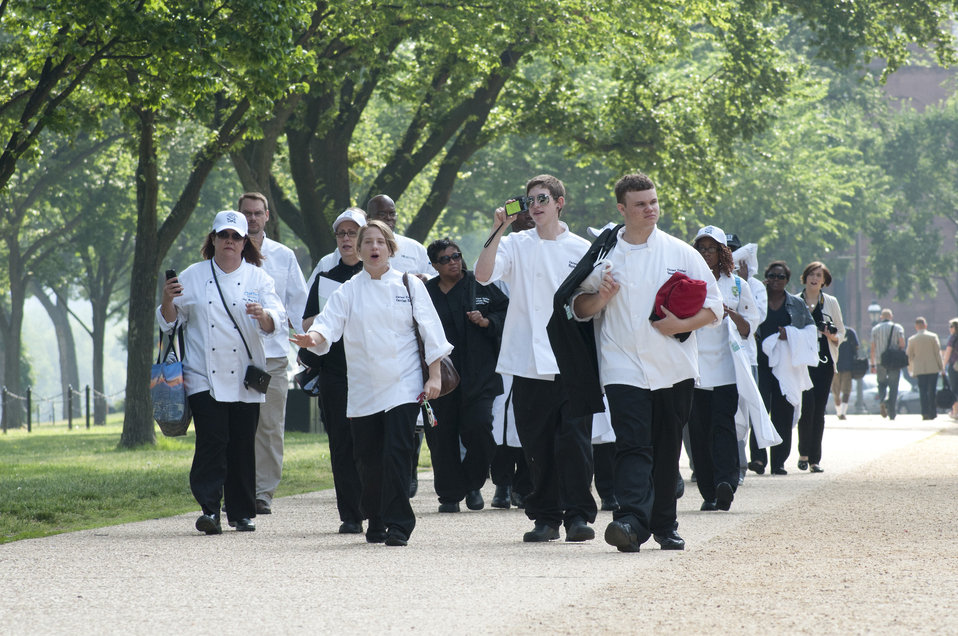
Cooking Up Change, National Healthy Cooking Competition at the USDA in Washington, DC on Monday, May 23, 2011.